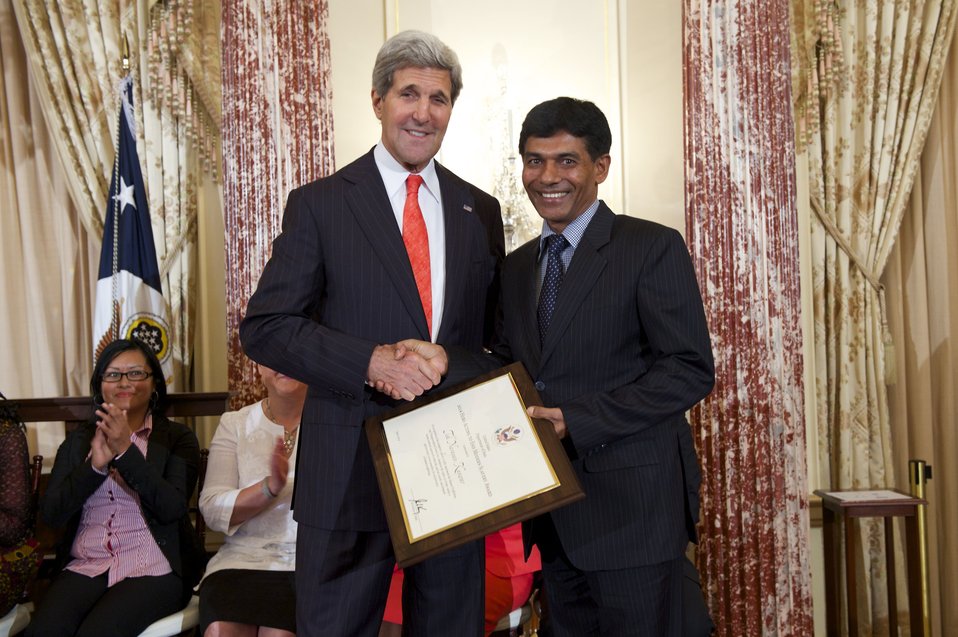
Secretary Kerry With TIP Hero Tek Narayan Kunwar of Nepal

U.S. Secretary of State John Kerry recognizes Tek Narayan Kunwar of Nepal as a 2014 Trafficking in Persons Report Hero at the U.S. Department of State in Washington, D.C., on June 20, 2014. Tek Narayan Kunwar, Lalitpur District Judge, has been at the forefront of efforts in Nepal to counter human trafficking by fully implementing the Human Trafficking and Transportation Control Act, while championing the rights of victims.